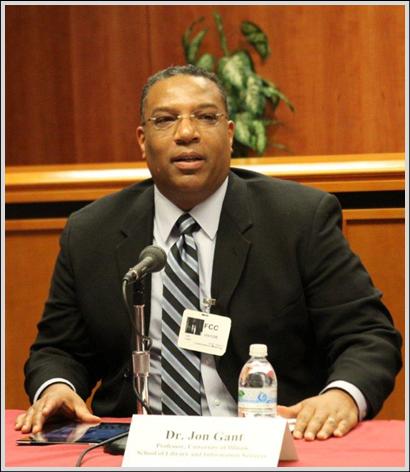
Dr. Jon Gant

Panel 1: What have we Learned from Academic Studies on How to Close the Broadband Adoption Gap